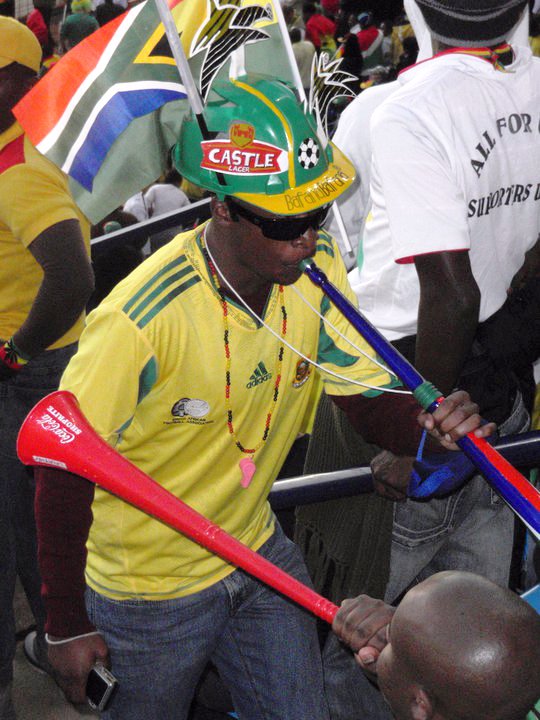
A South African fan plays his vuvuzela during the Ghana vs. Serbia World Cup soccer match at Loftus Versfeld Stadium in Tshwane, Pretoria, South Africa, on June 13, 2010.